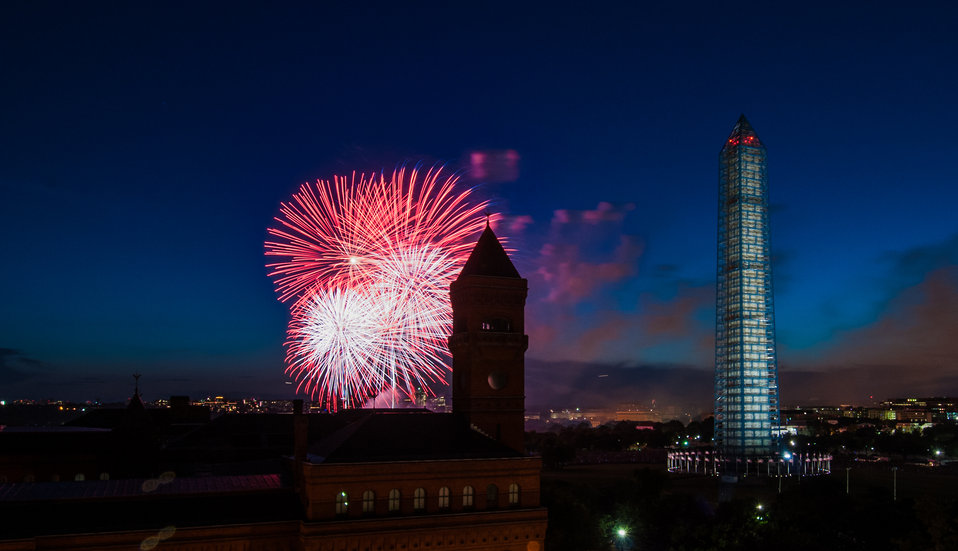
4th of July fireworks as seen from the U.S. Department of Agriculture (USDA) headquarters building, with the USDA Forest Service Yates Building in the foreground, left, and the Washington Monument in Washington, D.C., on July 4, 2013.